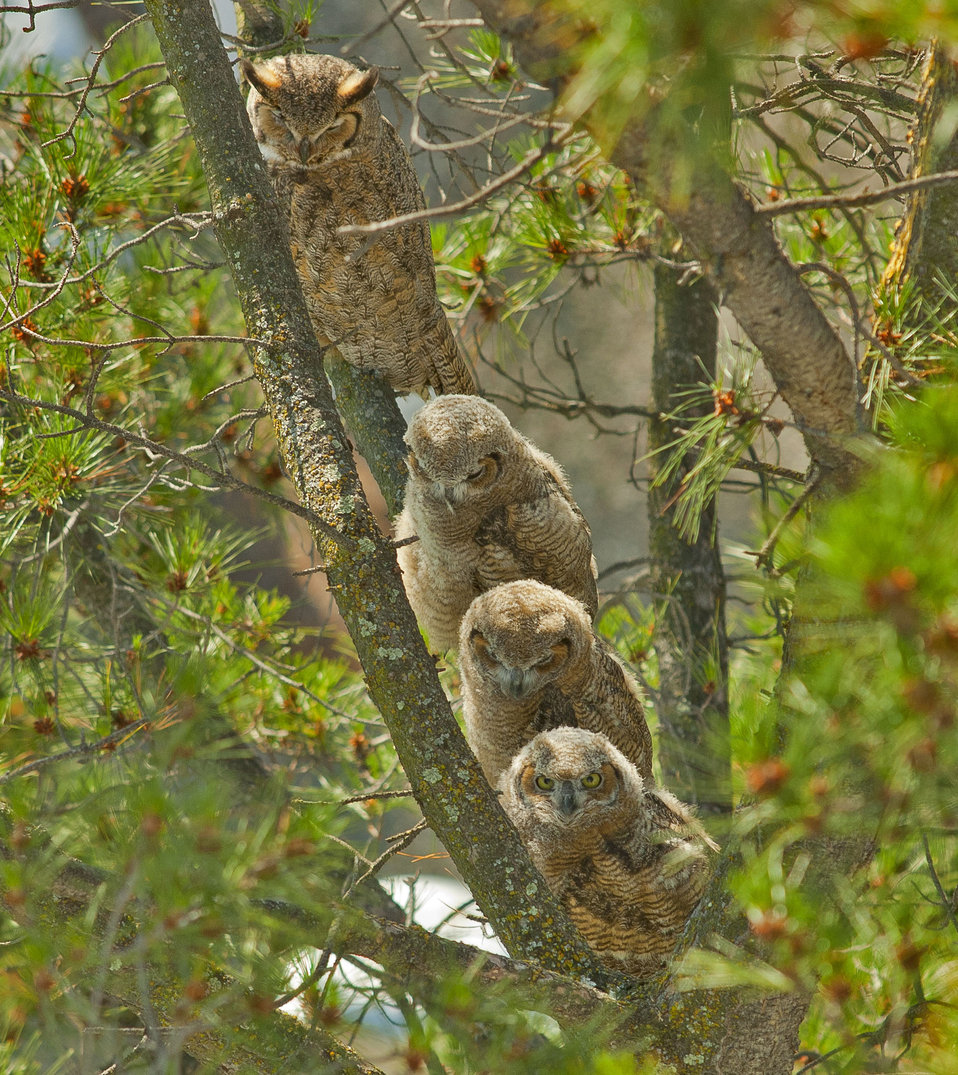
A mother horned owl perched with her three owlets on a pine tree branch near Lawrence Livermore National Laboratory.